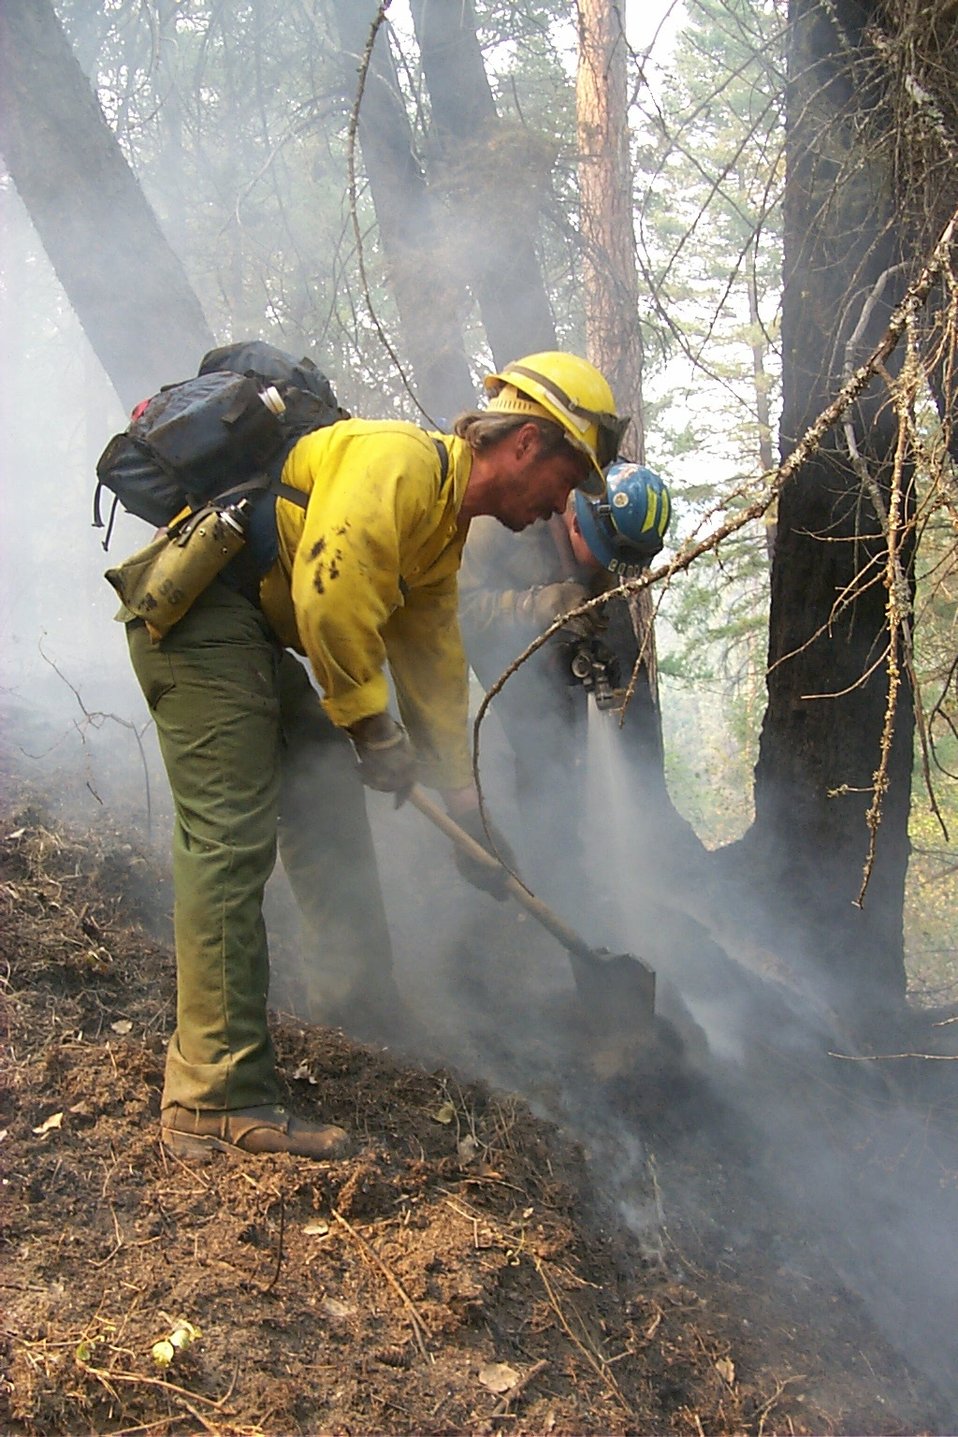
Line crew Fire Clearwater Fire Salmon Field Office USRD Upper Snake River District